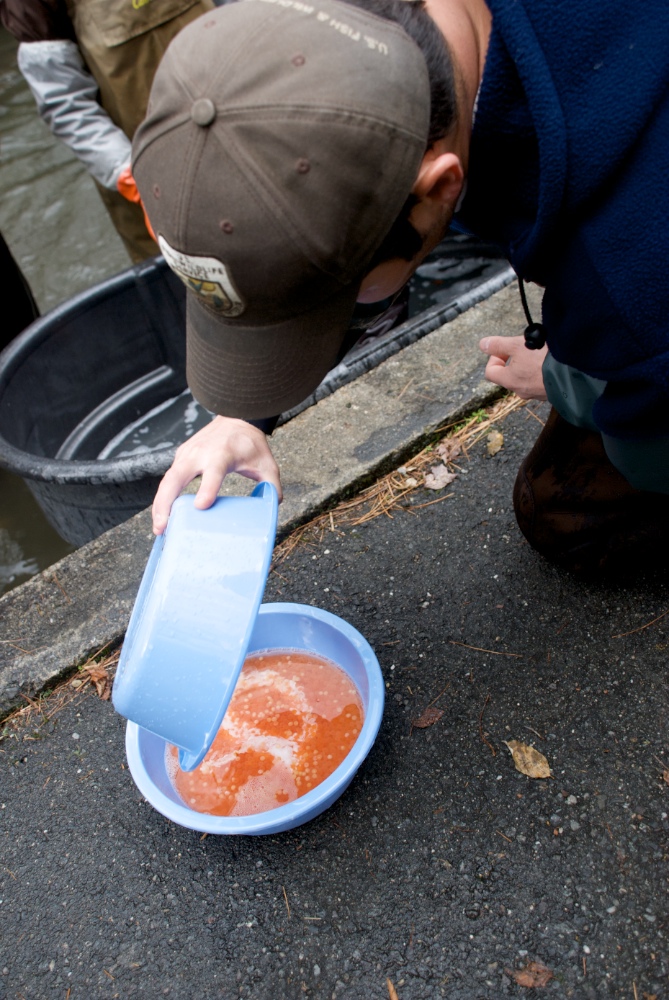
Richard Cronin National Salmon Station

Volunteers harvesting salmon eggs at the Richard Cronin National Salmon Station in Sunderland, MA.